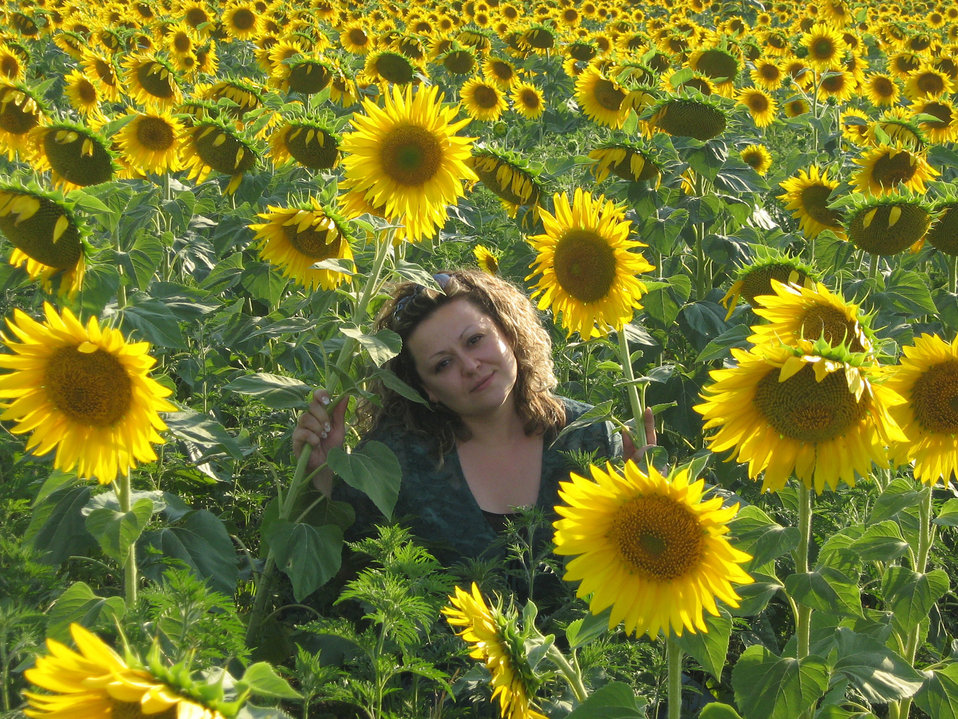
In the sunflowers ...

Girl among the blossoming sunflowers..